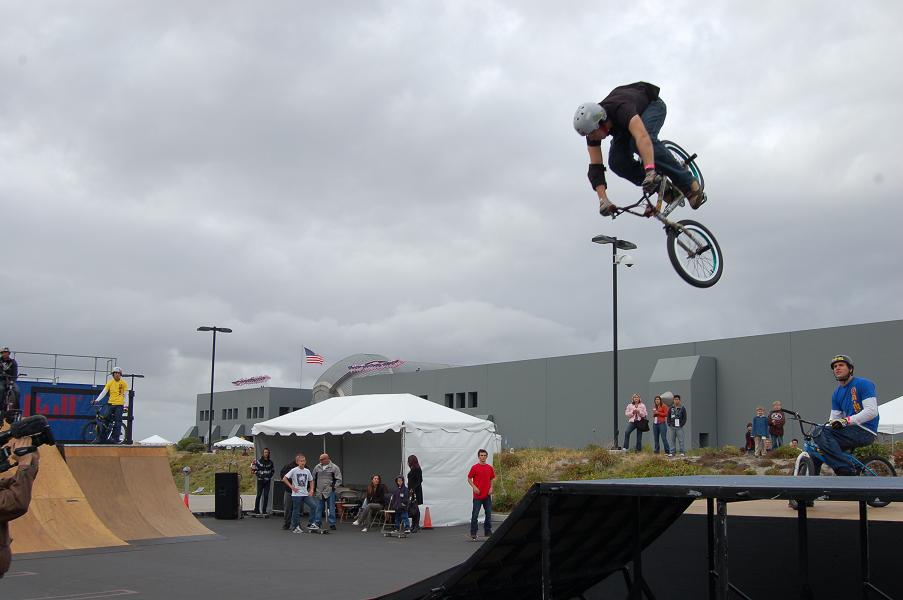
Bike Trick

Koji Kraft, a member of the Oakley Bike team, performs a trick during the Oakley Party Dec. 16. The party took place during the second day of the four-day Snowball Express event. The Snowball Express final two day will include a trip to Disneyland and tickets to an Anaheim Ducks game.